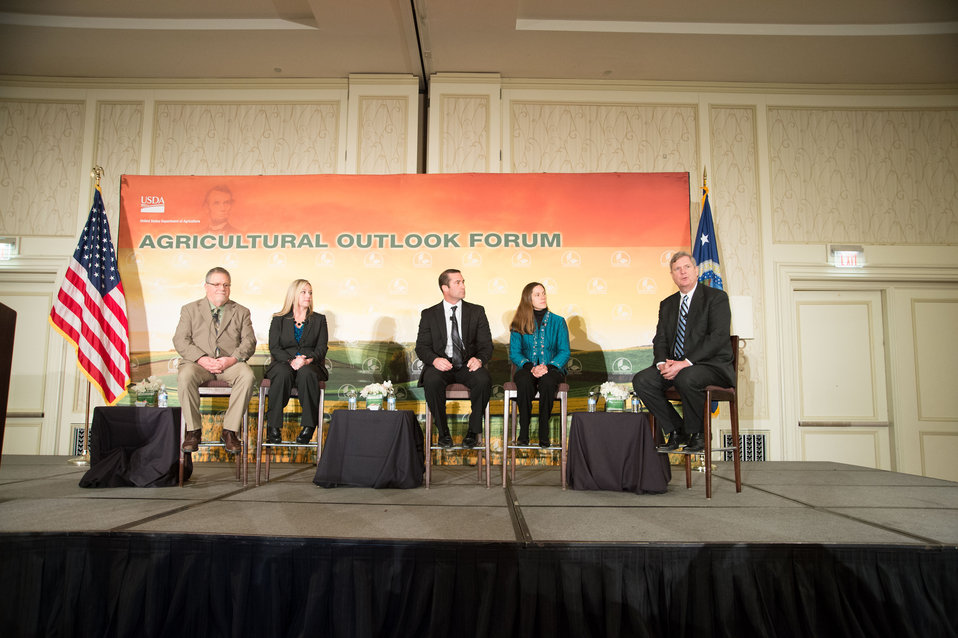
Agriculture Secretary Tom Vilsack moderates the plenary panel of Young Farmers - Unlimited Opportunities at the 2014 Agricultural Outlook Forum in Arlington, VA., on Thursday, Feb. 20, 2014. (L to R Veteran Coalition Executive Director and Farmer Michael O’Gorman, Top Producer Horizon awardee Joanna Carraway, National Outstanding Young Farmer awardee Greg Wegis, National Young Farmers Coalition Interim Director Emily Oakley, and Agriculture Secretary Tom Vilsack). The U.S. Department of Agriculture's (USDA) annual Agricultural Outlook Forum brings together the agricultural community to discuss policy, trade, science, rural development, and the economic outlook for the coming year. The Forum also focuses on forestry, health and nutrition issues, and the changing dynamics and face of rural America.USDA photo by Bob Nichols.